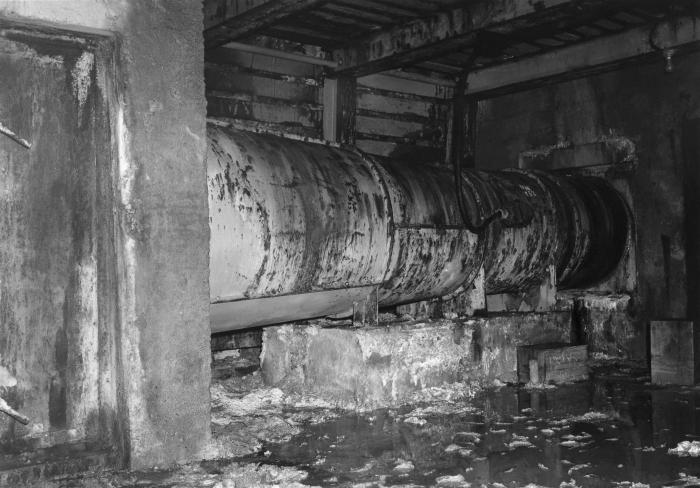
This historical photograph, provided by the Center for Disease Control's (CDC), National Institute for Occupational Safety and Health (NIOSH), depicted the inside of the 'U.S. Smelting, Refining, & Mining Co.' mine shaft in Utah. Located at the bottom of the British Shaft B. (Exhaust Side), in the main ventilation shaft, No. 3 (U.S. Section), where towards the right, a 50 HP Joy Axivane� exhaust fan was situated. This fan had a 35,000 cfm flow-through capacity. In the close confines of a subterranean mine such as this one, it's critically important that proper air quality be maintained.